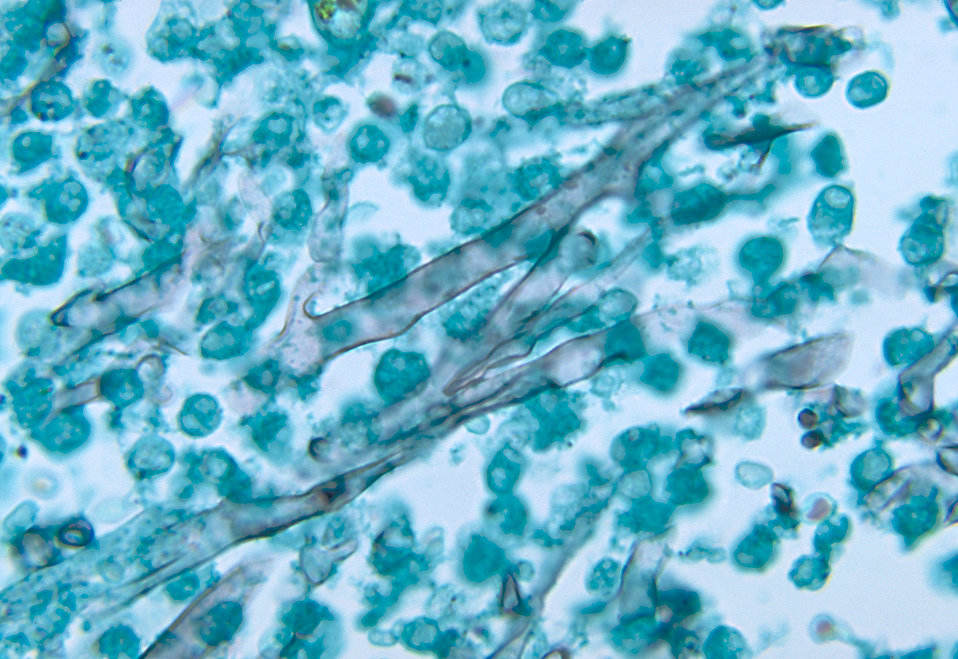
This slide describes the histopathologic changes seen in a heart valve due to zygomycosis caused by Mucor pusillus.